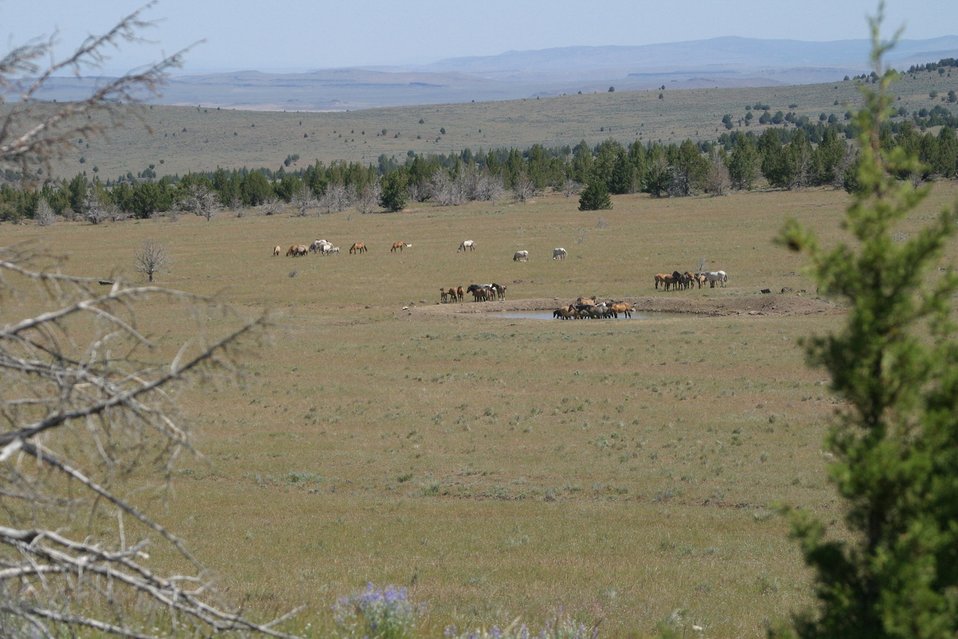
Wild Horse(s) in the Kiger Wild Horse Herd Management Area.